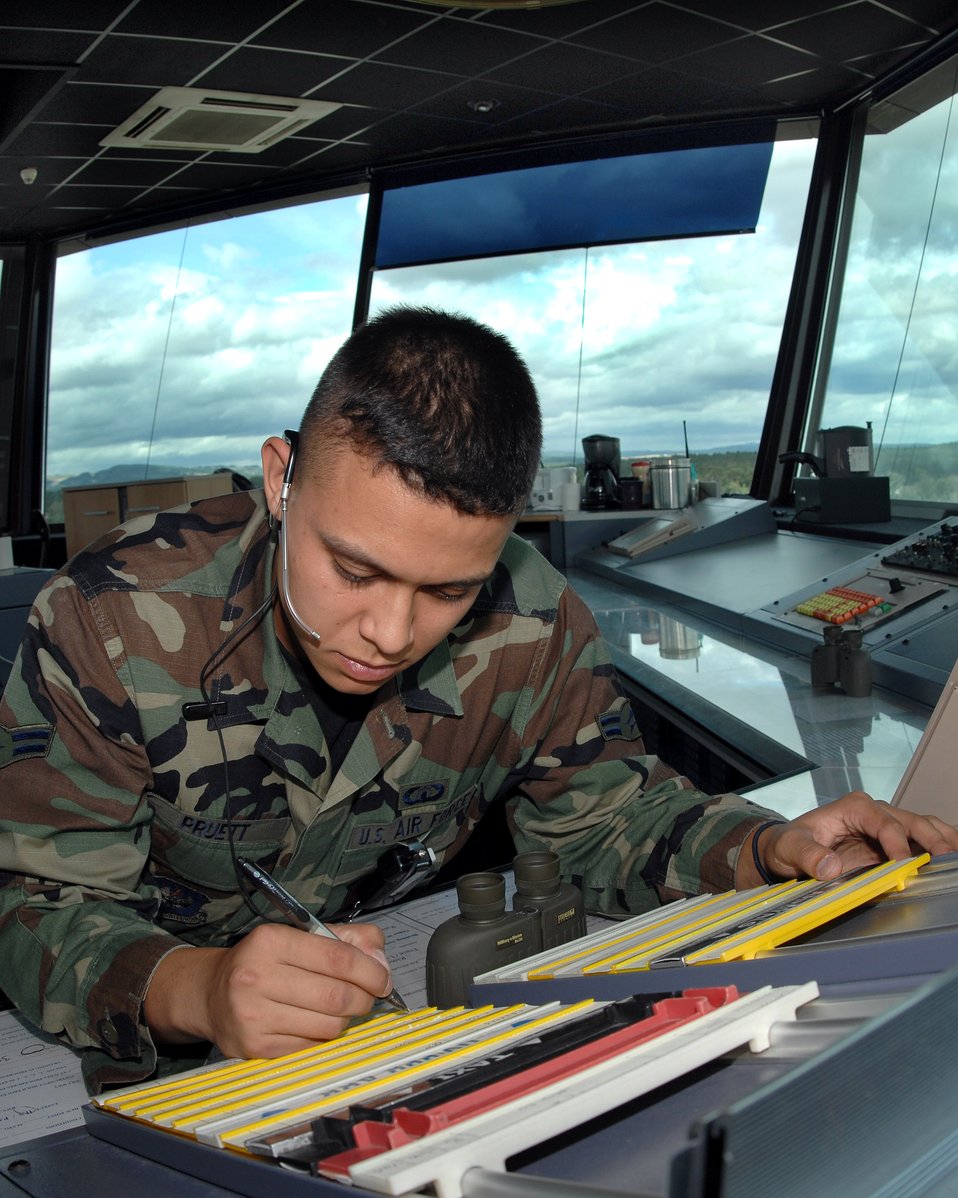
Guidance from above

Airman 1st Class Earl Pruett writes coordinates of an inbound aircraft on a flight progress strip June 26 in the control tower at Ramstein Air Base, Germany. Airman Pruett is a flightline local coordinator assigned to the 86th Operations Support Squadron.